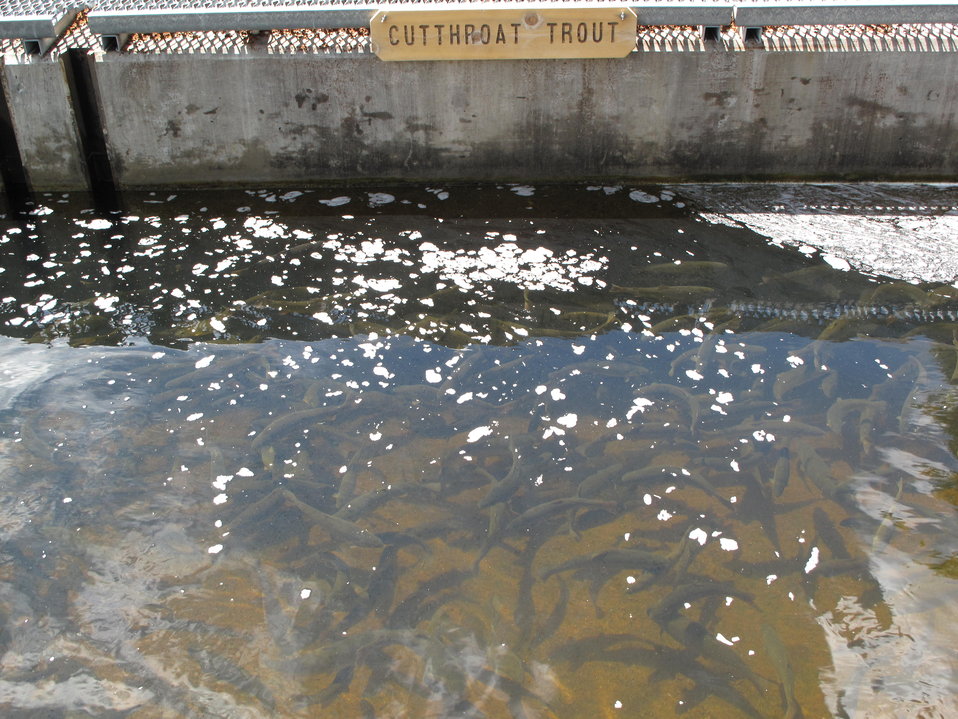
Leadville National Fish Hatchery

This outdoor raceways contain Snake River cutthroat trout and rainbow trout between the ages of 9 and 21 months.